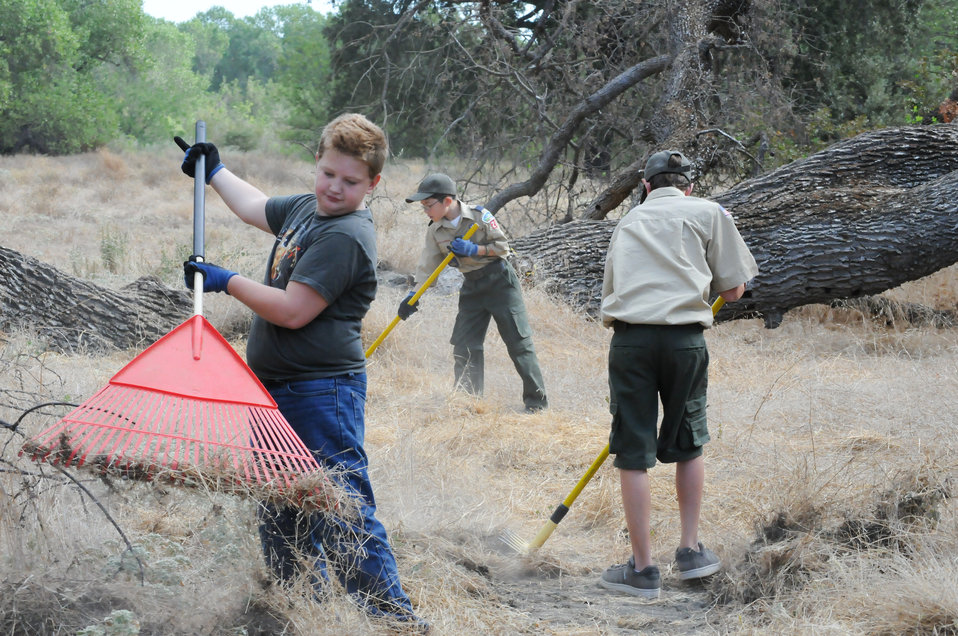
National Public Lands Day at Black Butte Lake

Scouts with Boy Scout Troop 4 clear brush from a hiking trail at Black Butte Lake, Calif., Sept. 24 in celebration of National Public Lands Day. Black Butte was one of seven U.S. Army Corps of Engineers Sacramento District recreation parks that participated in the event.